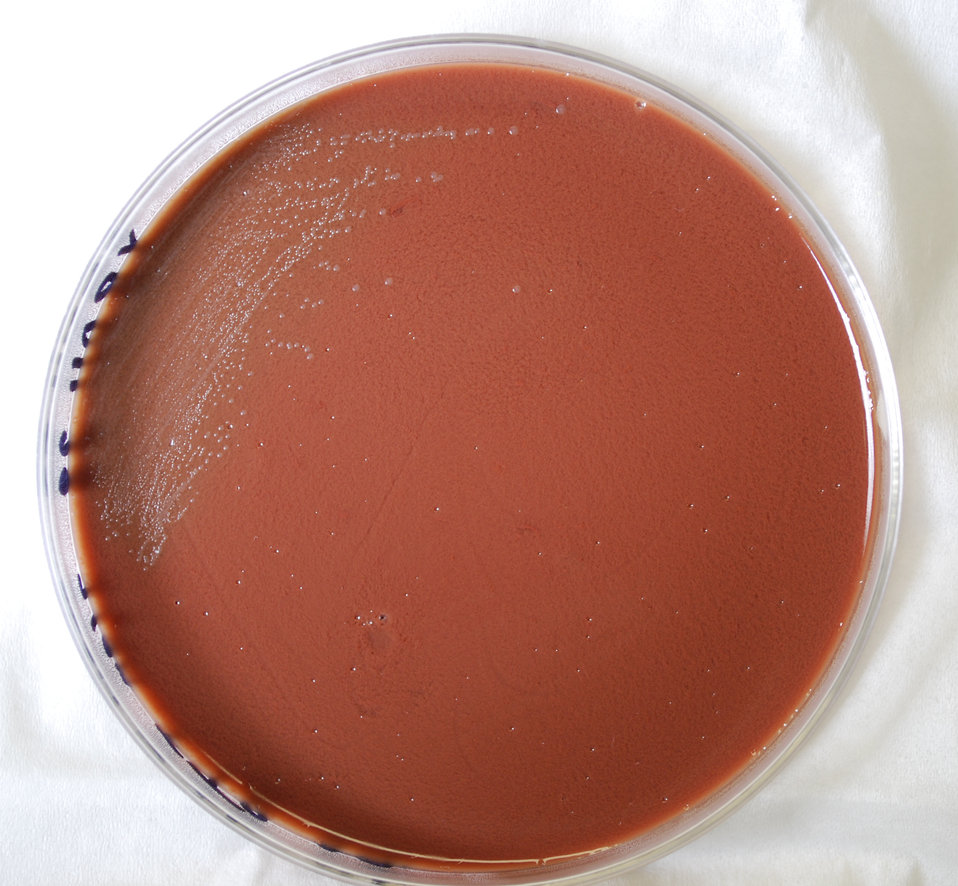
This photograph depicts the colonial morphology displayed by Gram-negative Yersinia pestis bacteria, which was grown on a medium of chocolate agar, for a 48 hour time period, at a temperature of 37�C. For a closer view of these bacterial colonies, see PHIL 12228.